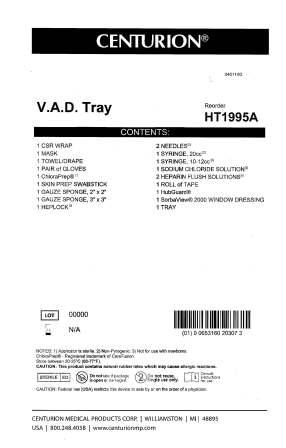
RECALLED - Convenience kits which contain bacteriostatic sodium chloride solution by American Regent

April 1, 2011 - Product Recall - Centurion Medical Products Initiates Voluntary Recall of Customized Convenience Kits (including select Central Venous Catheter, PICC Insertion, and VAD Trays) that contain American Regent’s Bacteriostatic Sodium Chloride Injection, USP, 0.9% 30 mL Multiple Dose Vials.